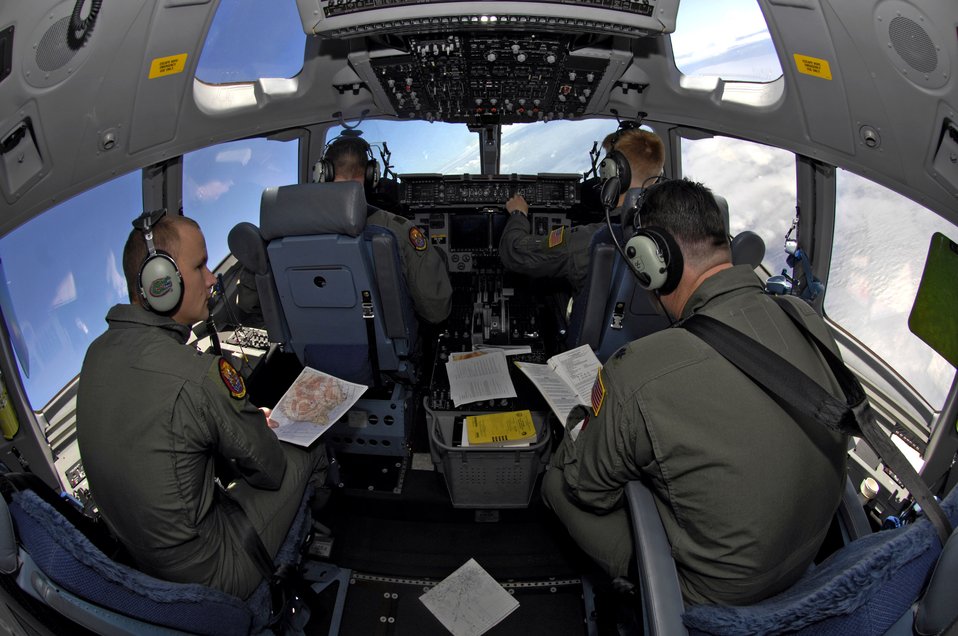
Globemaster training

Pilots from the 535th Airlift Squadron from Hickam Air Force Base, Hawaii, fly their C-17 Globemaster III during a local training mission Nov. 15 over the Hawaiian Islands.